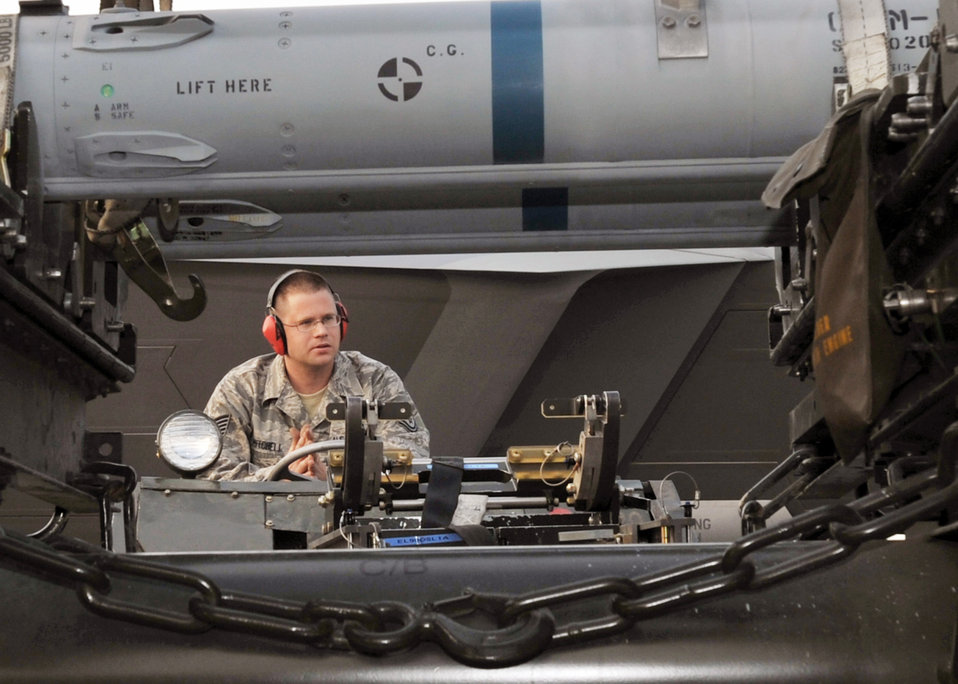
Alaskan load crews compete

Tech. Sgt. Michael Mitchell, 477th Aircraft Maintenance Squadron, waits for members of his crew to load the next missile during a load crew competition July 10 on the Elmendorf Air Force Base, Alaska, flightline.